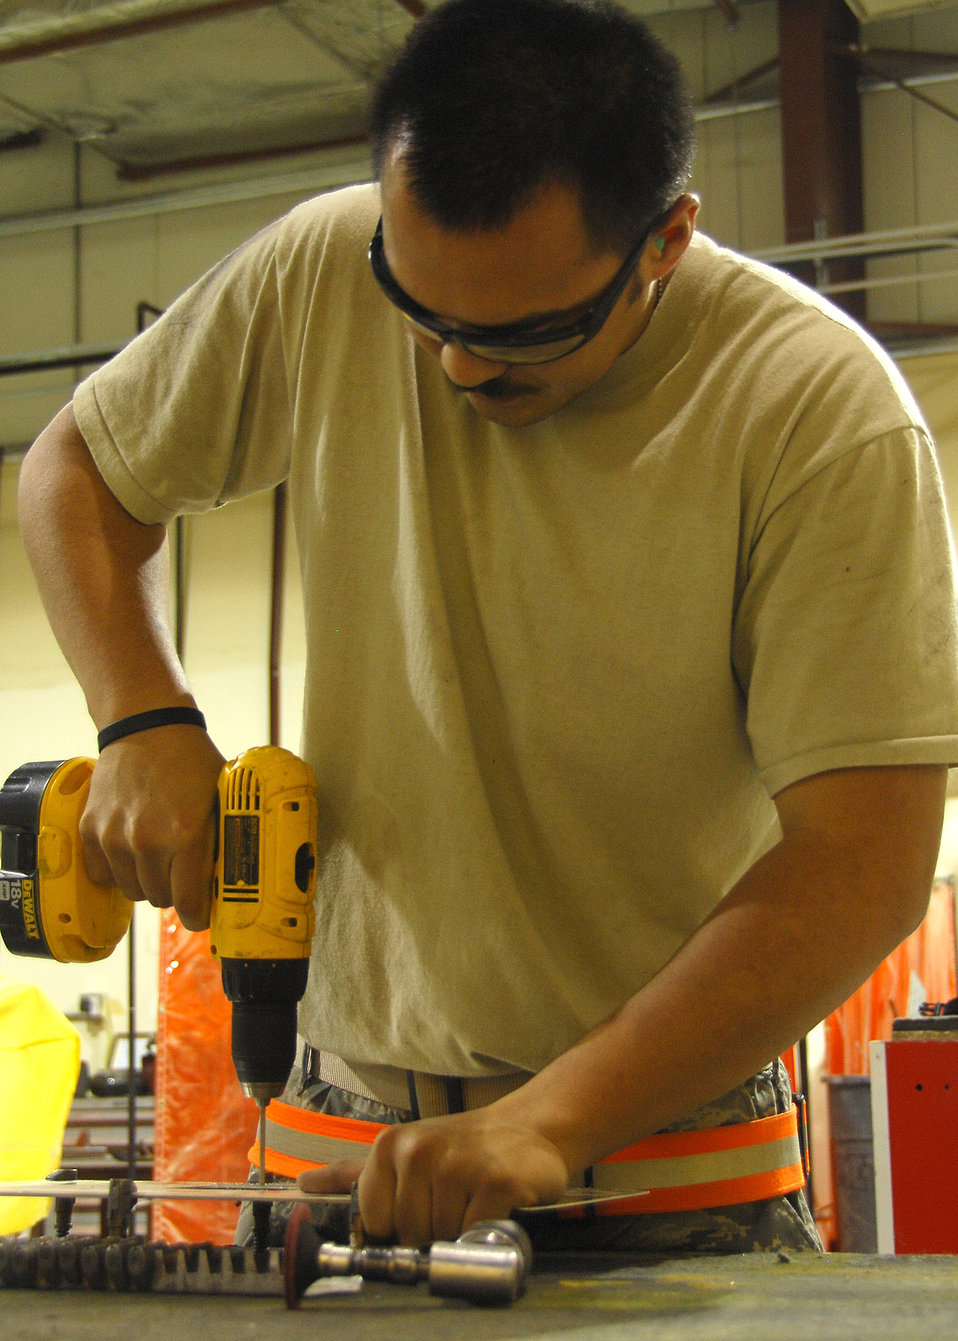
Combat metals

Airman 1st Class Benson Chang drills holes into a flush patch for an aircraft repair on Sept. 17 at an air base in Southwest Asia. Members of the combat metals shop perform aircraft sheet metal fabrication, structural repairs and modifications for aircraft. Airman Chang is assigned to the 386th Expeditionary Maintenance Squadron combat metals section and deployed from Yokota Air Base, Japan.